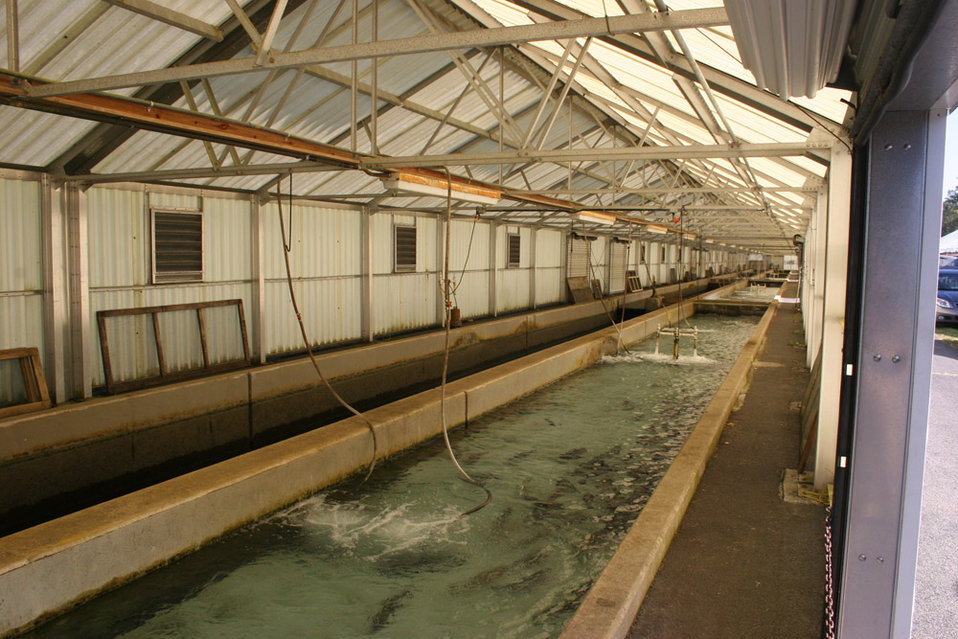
Freshwater Folk Festival

The 5th Annual Freshwater Folk Festival at White Sulphur Springs National Fish Hatchery in West Virginia.Credit: USFWS